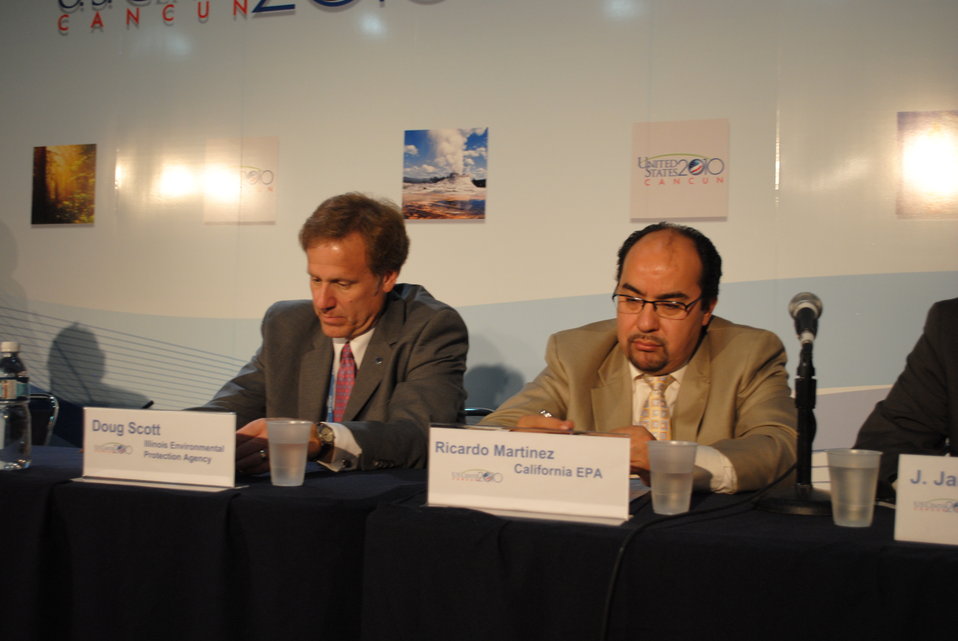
Doug Scott and Ricardo Martinez Listen to a Question from the Audience

Director of the Illinois Environmental Protection Agency Doug Scott and Deputy Secretary for Border Affairs for the California Environmental Protection Agency Ricardo Martinez listen to a question from the audience at the U.S. Center at COP-16 in Cancun, Mexico, on December 6, 2010.